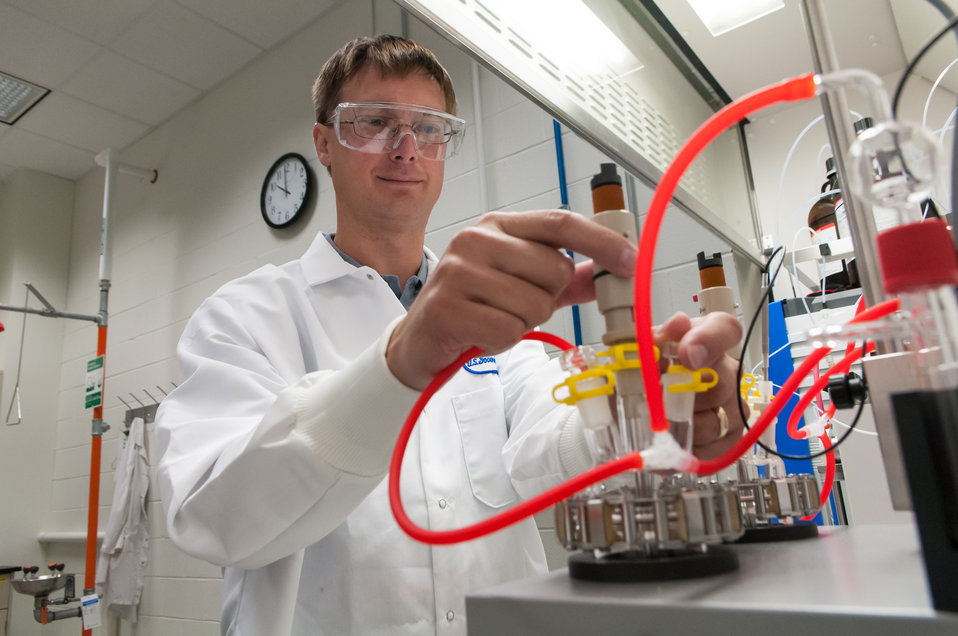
Argonne National Laboratory chemist runs an experiment on a reaction calorimeter in the lab's Materials Engineering and Research Facility (MERF).

The reaction calorimeter gives Argonne researchers the ability to precisely measure how much heat is generated by a chemical reaction. MERF and several other Argonne research facilities form an integral part of the Joint Center for Energy Storage Research.